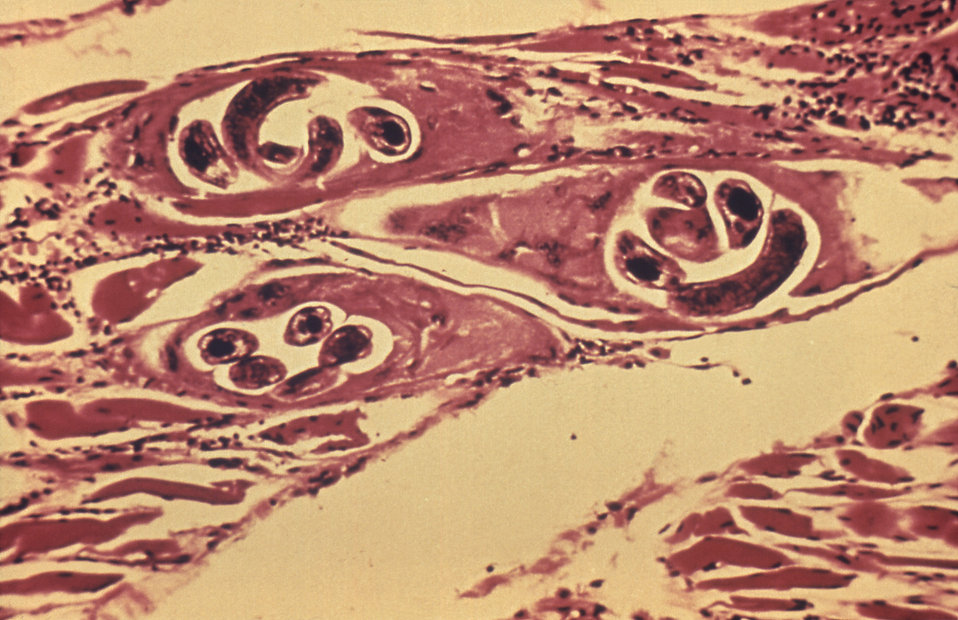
This micrograph reveals developing Trichinella cysts within human muscle tissue.